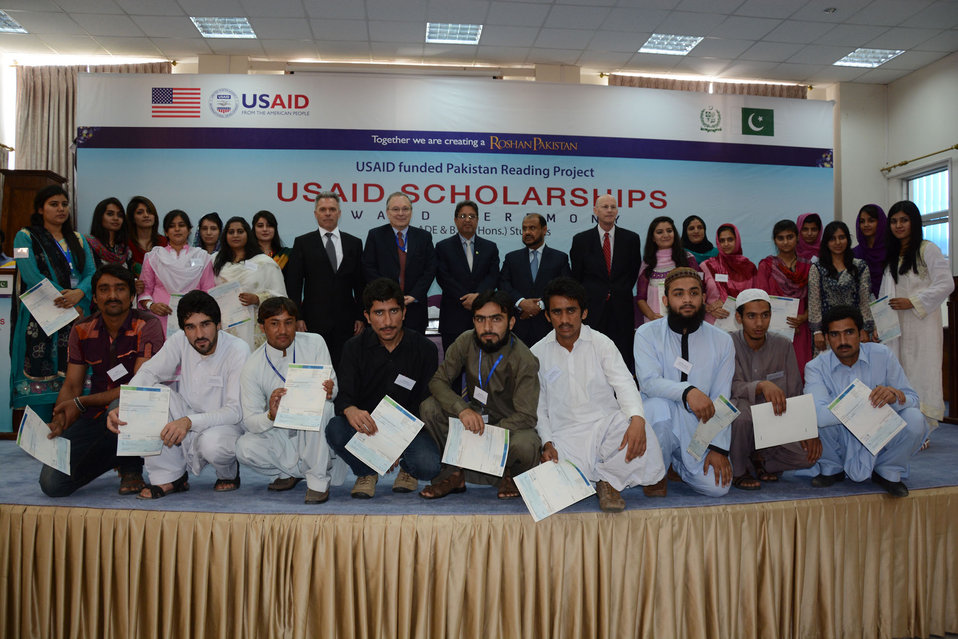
USAID awarded scholarships to 26 students of undergraduate degree programs in teacher education from the International Islamic University, Islamabad as part of the $165 million Pakistan Reading Project. 01